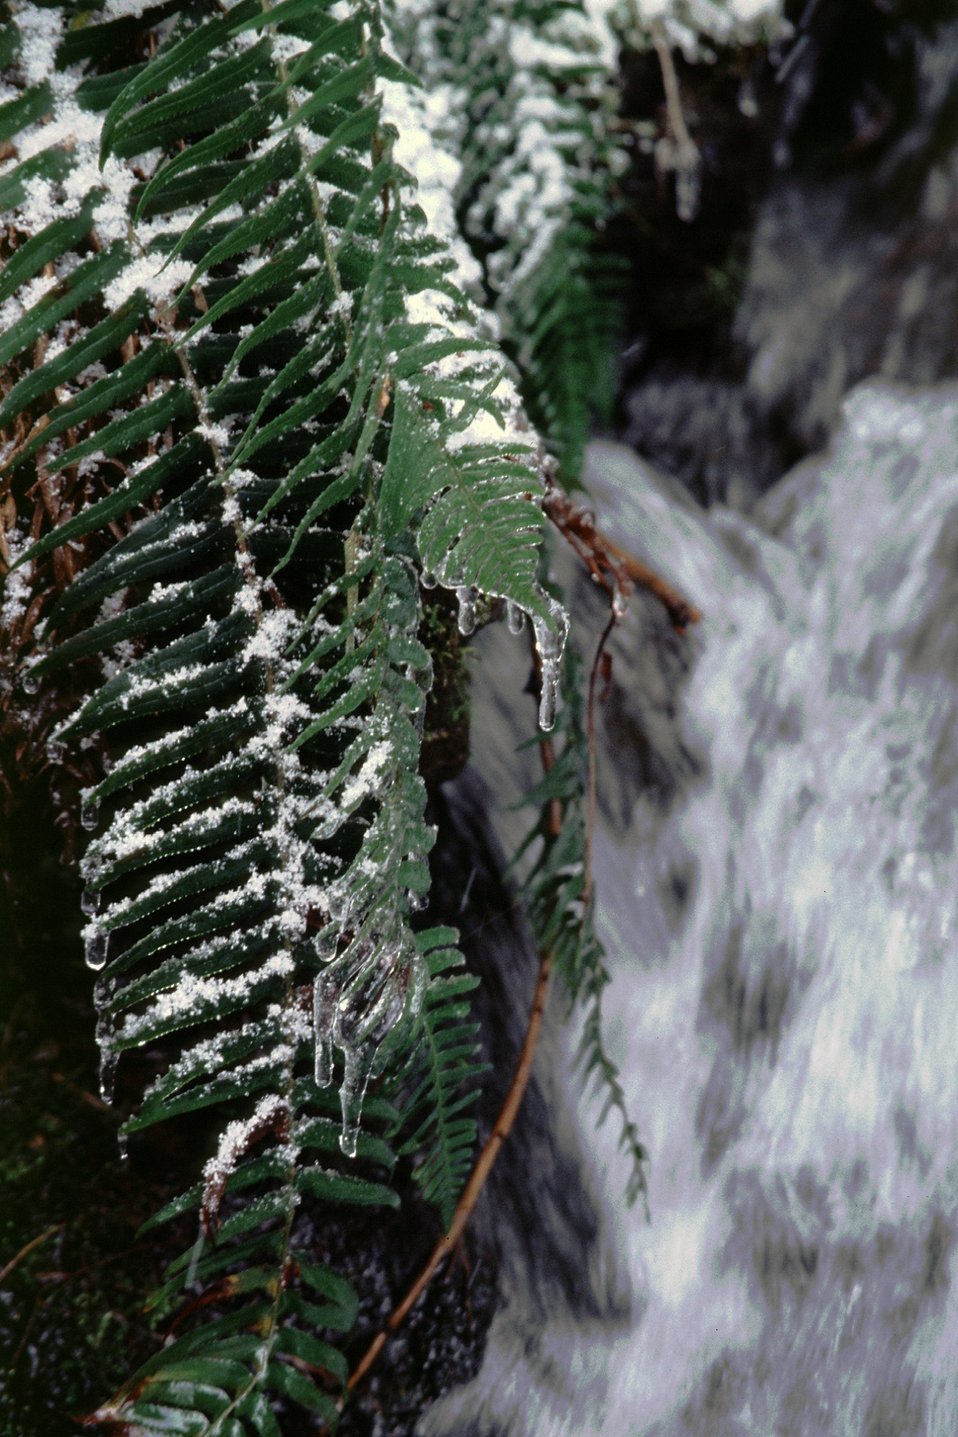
Mid Winter forest scene in the Mollala Corridor.